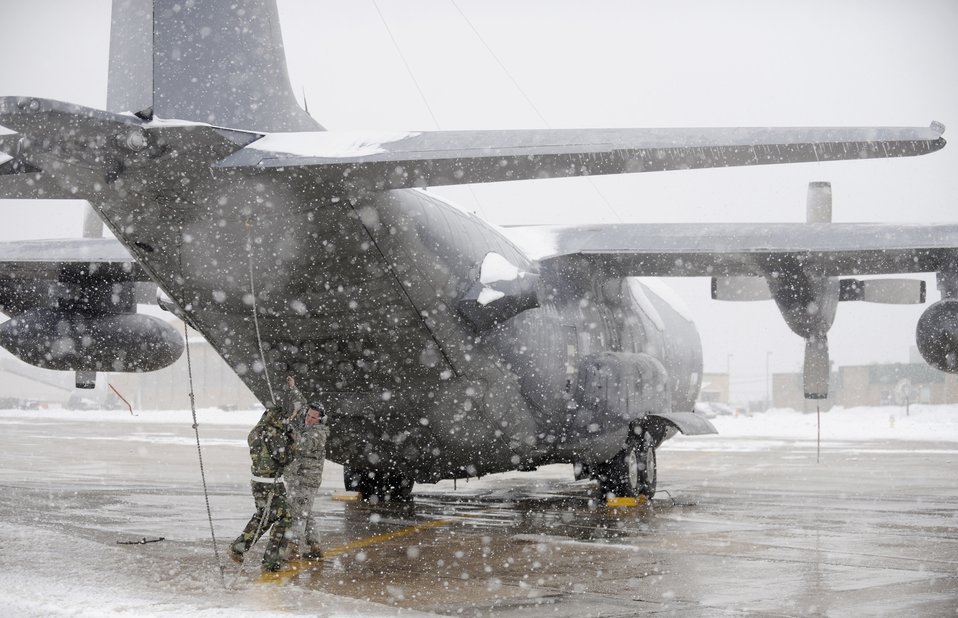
New York maintainers secure aircraft

Airmen with the 106th Aircraft Maintenance Squadron work to secure a HC-130 Hercules during a snowstorm at the New York Air National Guard's 106th Rescue Wing at Francis S. Gabreski Airport in Westhampton Beach, N.Y., Feb. 26, 2010.